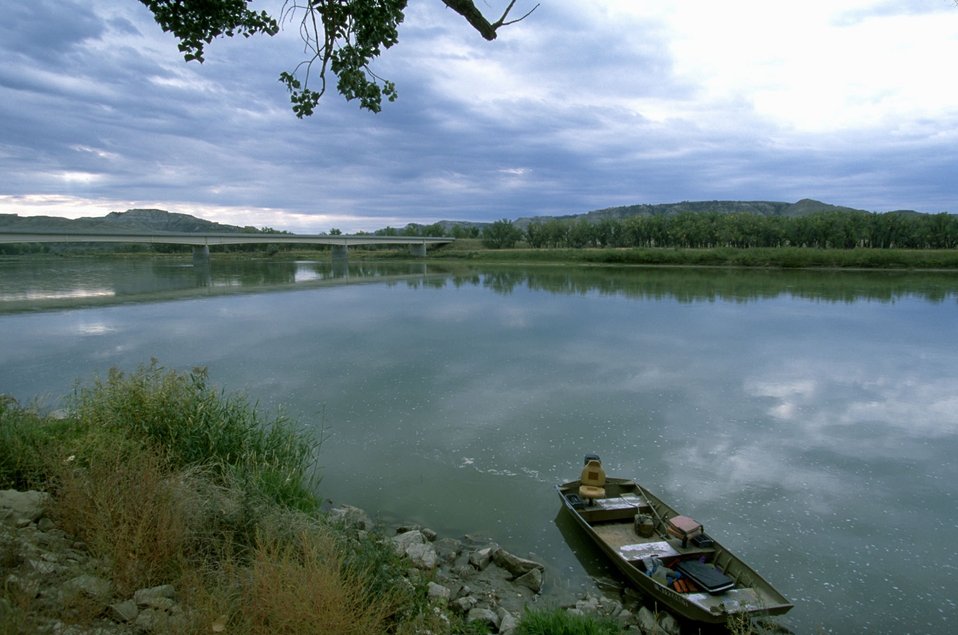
PN Bridge across the Upper Missouri River north of Winifred